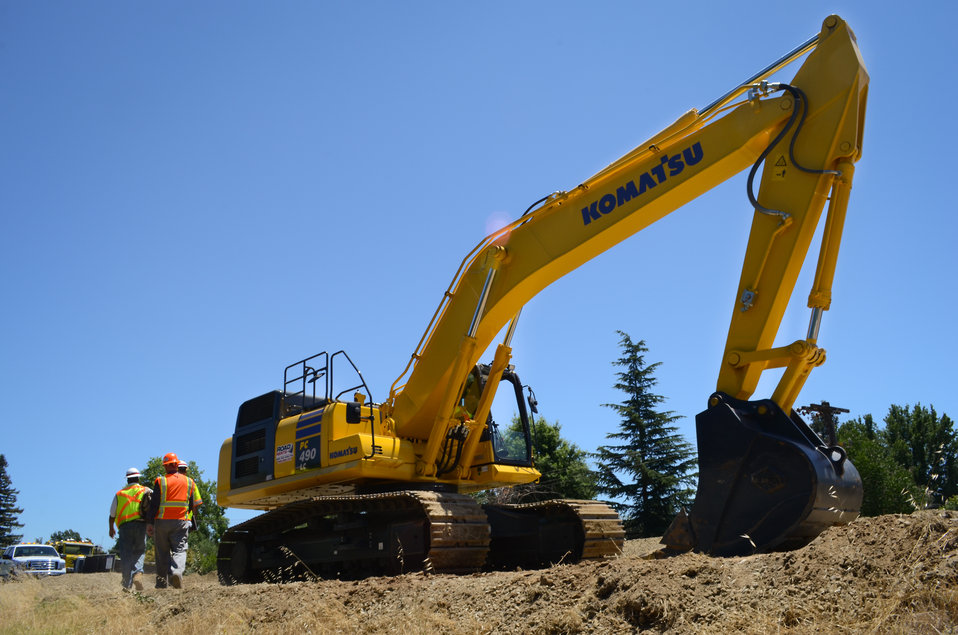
Corps reps inspect the levee construction site near River Park

Representatives from the U.S. Army Corps of Engineers Sacramento District walk the construction site on the first day of levee construction July 16, 2013, near the River Park neighborhood of Sacramento, Calif. The project, near the City of Sacramento's Sump Station 10, will fill in a gap in the levee's existing cutoff wall where construction was complicated by the station's pipes, which run through the levee.